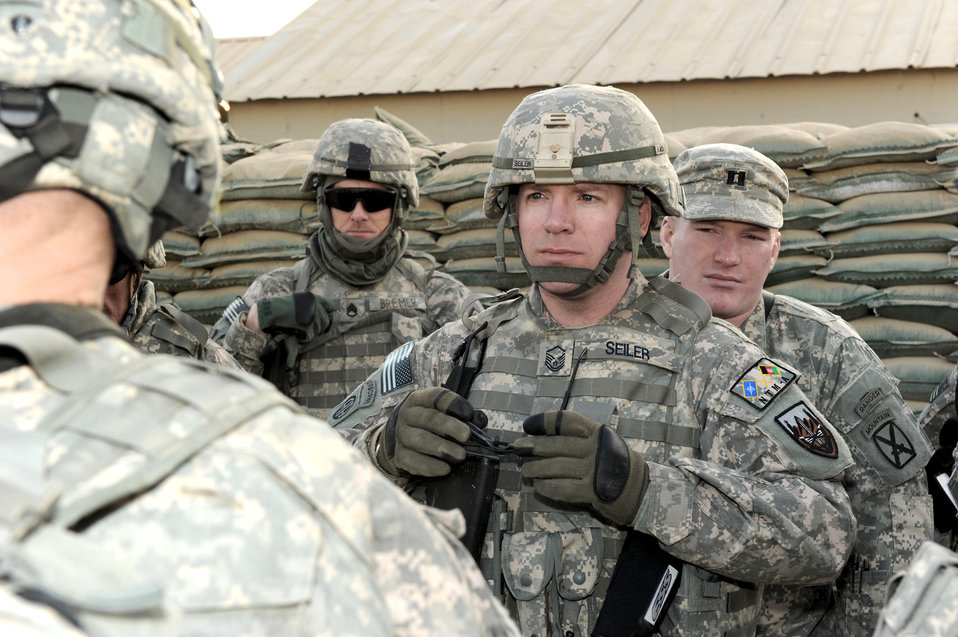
755th anniversary

U.S. Air Force Master Sgt. Patrick Seiler listens to a convoy brief Jan. 19, 2010, at Bagram Air Force Base, Afghanistan. Sergeant Seiler is a resource advisor/convoy driver assigned to the Combined Joint Task Force 82 Regional Support Team East and deployed from Ellsworth Air Force Base, S.D.